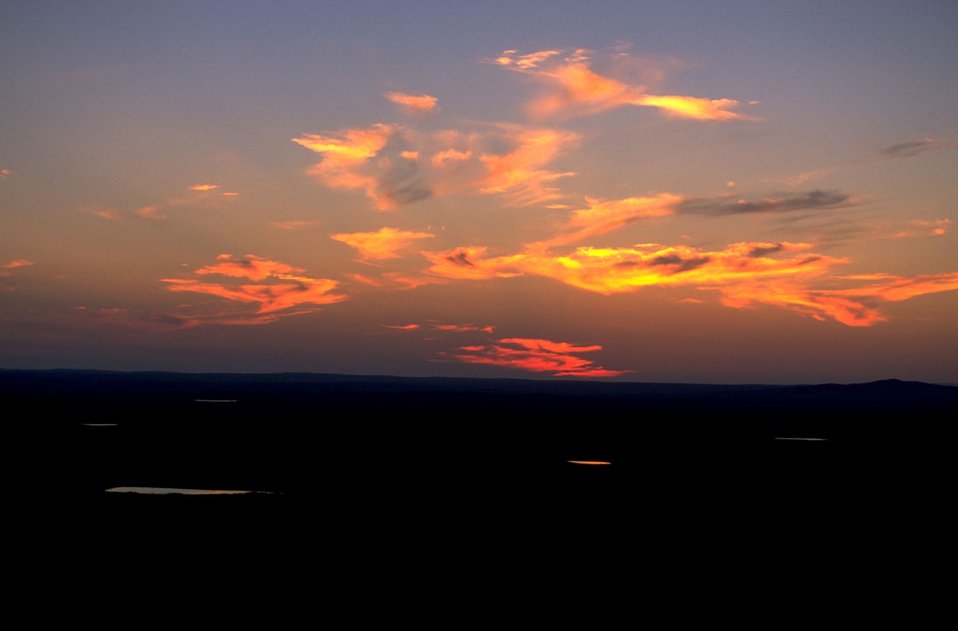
Sunset 35 miles north of Belle Fourche